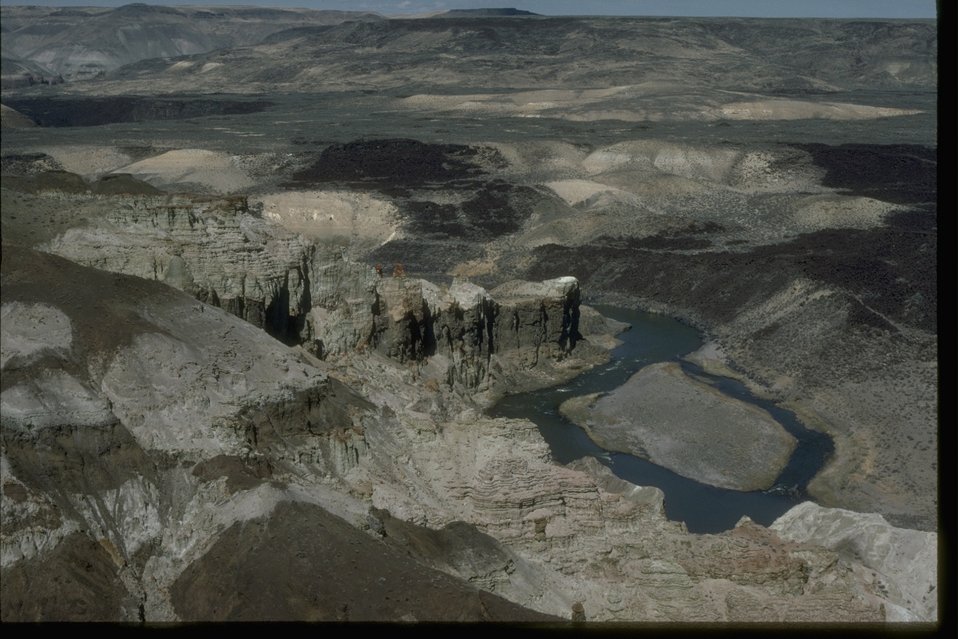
Aerial view of the Owyhee Chalk Basin in the Lower Owyhee Canyon Wilderness Study Area. OR 3-110